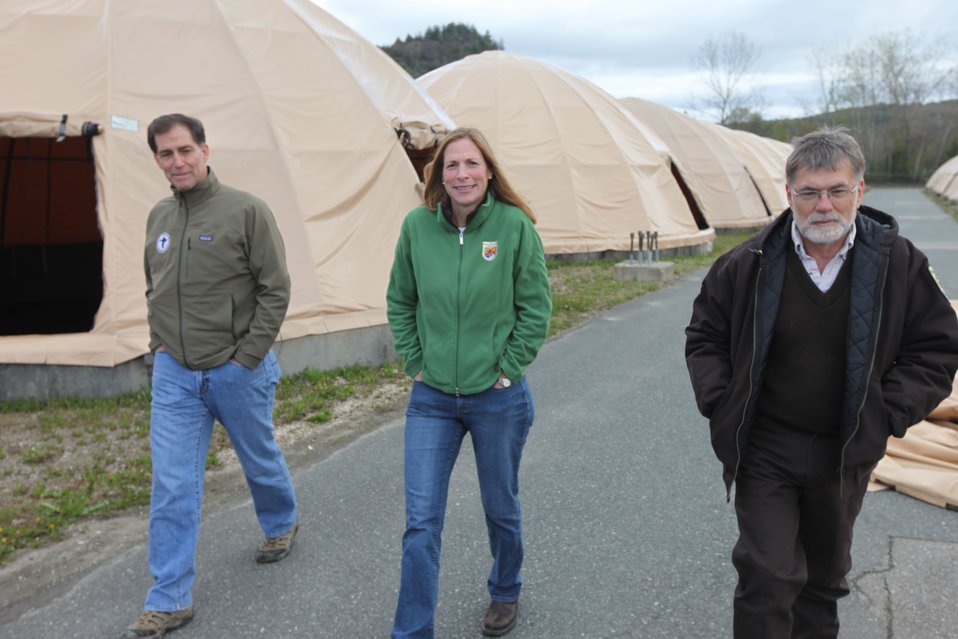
Dan Ashe, Wendi Weber & Ken Gillette

U.S. Fish & Wildlife Service Director Dan Ashe visits the Northeast Region
for a tour of the White River National Fish Hatchery in Bethel, Vermont on
April 27, 2012. The hatchery was devastated by Tropical Storm Irene and
Dan Ashe had the chance to meet and thank the staff for their heroic work.
Director Ashe also visited restoration/flood response/fish passage project
sites in Rochester, Vermont and met with local officials and staff from the
White River Partnership.